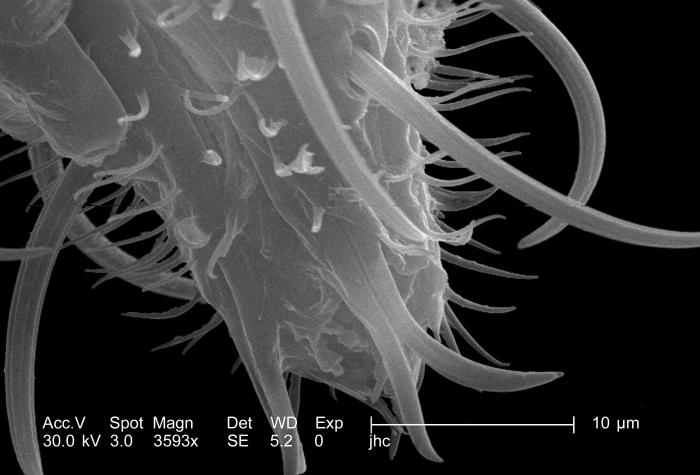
Under a high magnification of 3593x, which is approximately 8x that of PHIL 8786, this scanning electron micrograph (SEM) revealed some of the morphologic features displayed on the distal tip of an Anopheles gambiae mosquito's "labellum". The labellum is the tip of the ensheathed proboscis, which retracts as the sharp stylets contained within pierce the host's skin surface, as the insect obtains its blood meal.